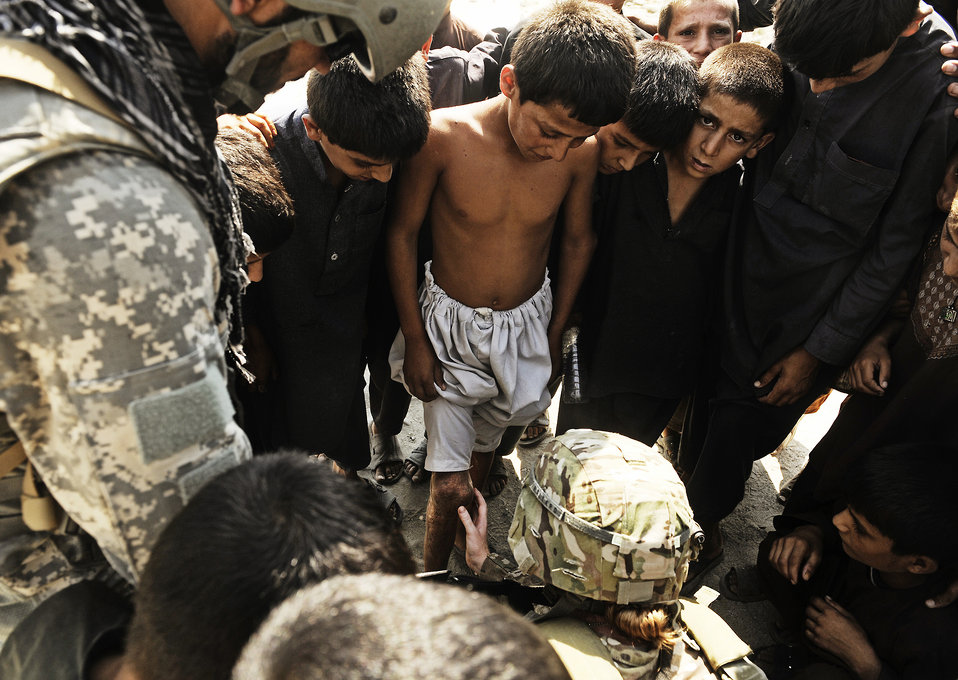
Helping hand

Tech. Sgt. Angela Pollard examines a child's injured knee during a mentoring neighborhood patrol Sept. 5, 2011, in the Laghman province of Afghanistan. Laghman Provincial Reconstruction Team members joined Afghan National Police members on a patrol to teach them to conduct foot patrols through villages and talk to the locals, gathering information first hand. Pollard is a medic attached to the Laghman PRT.